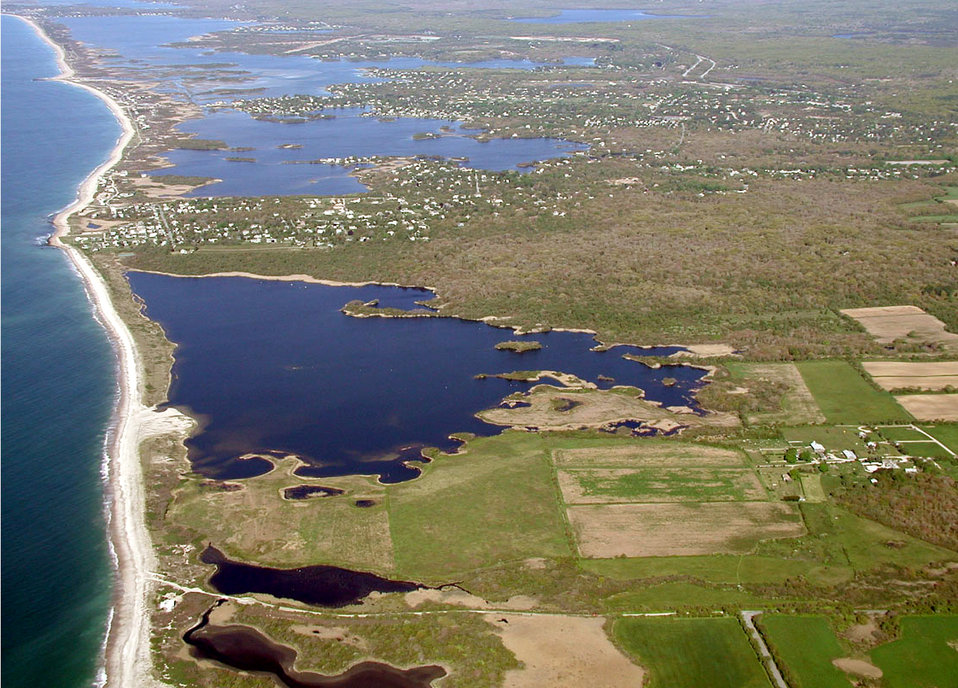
Aerial view of Trustom Pond before Hurricane Sandy (RI)

This is an aerial shot of Rhode Island's only undeveloped coastal freshwater pond, which sits on Trustom Pond NWR. This photograph was taken in 2010, and shows how the pond and ocean looked prior to the Hurricane Sandy super storm in 2012.